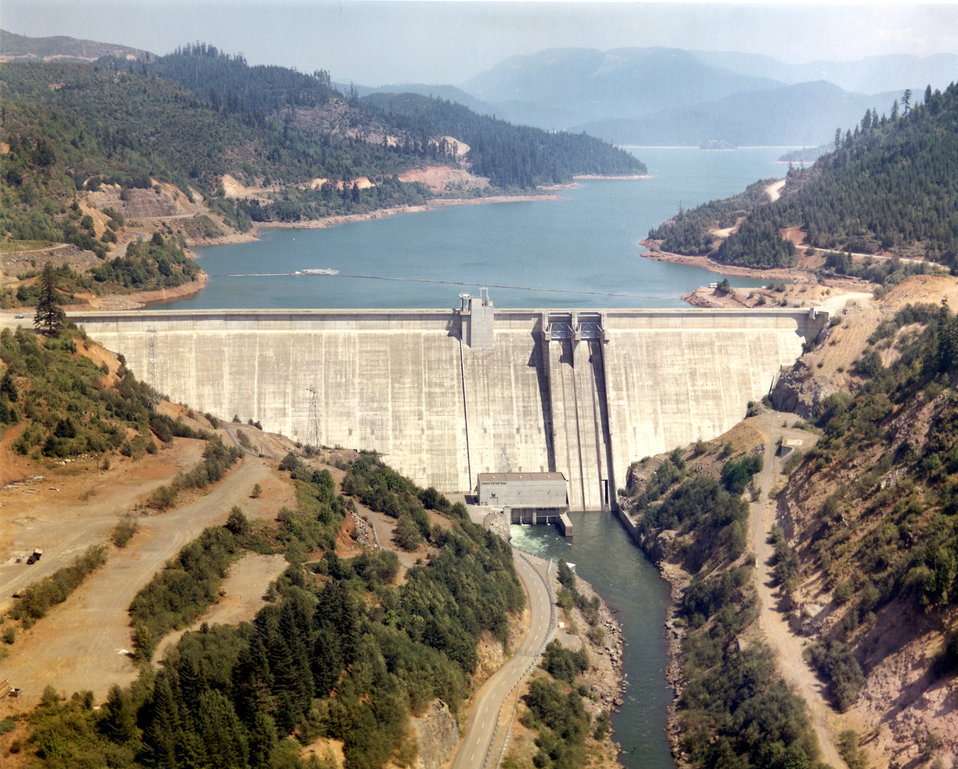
Green Peter Dam in Middle Santiam River, Oregon.